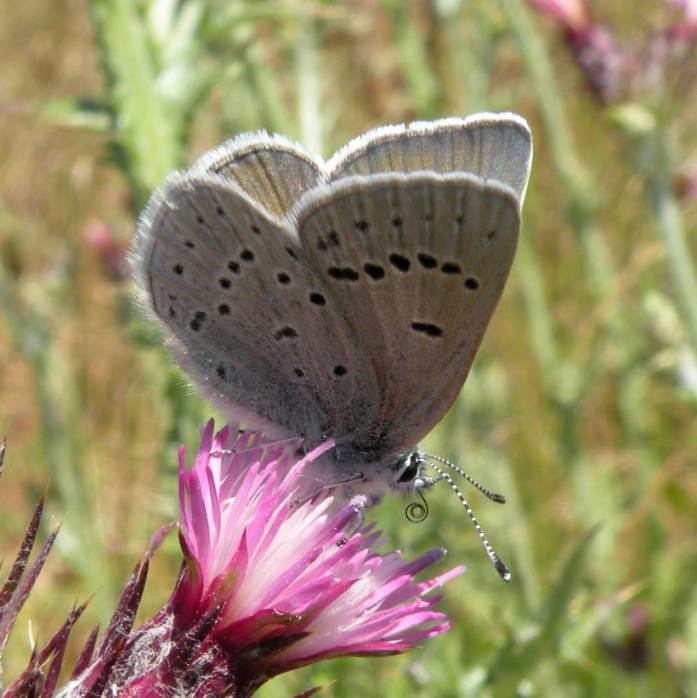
Mission Blue Butterfly (endangered)

Photo credit: Stuart Weiss

A stunning, close-up view of a mission blue butterfly. This species was added to the Endangered Species list on June 8, 1976.